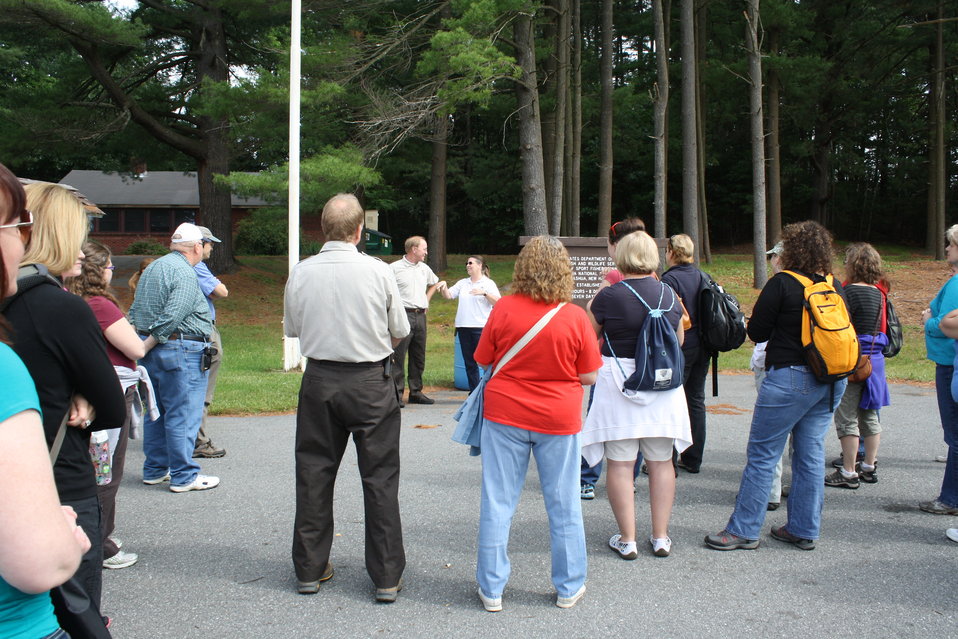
Nashua National Fish Hatchery welcomes regional office employees

Welcome